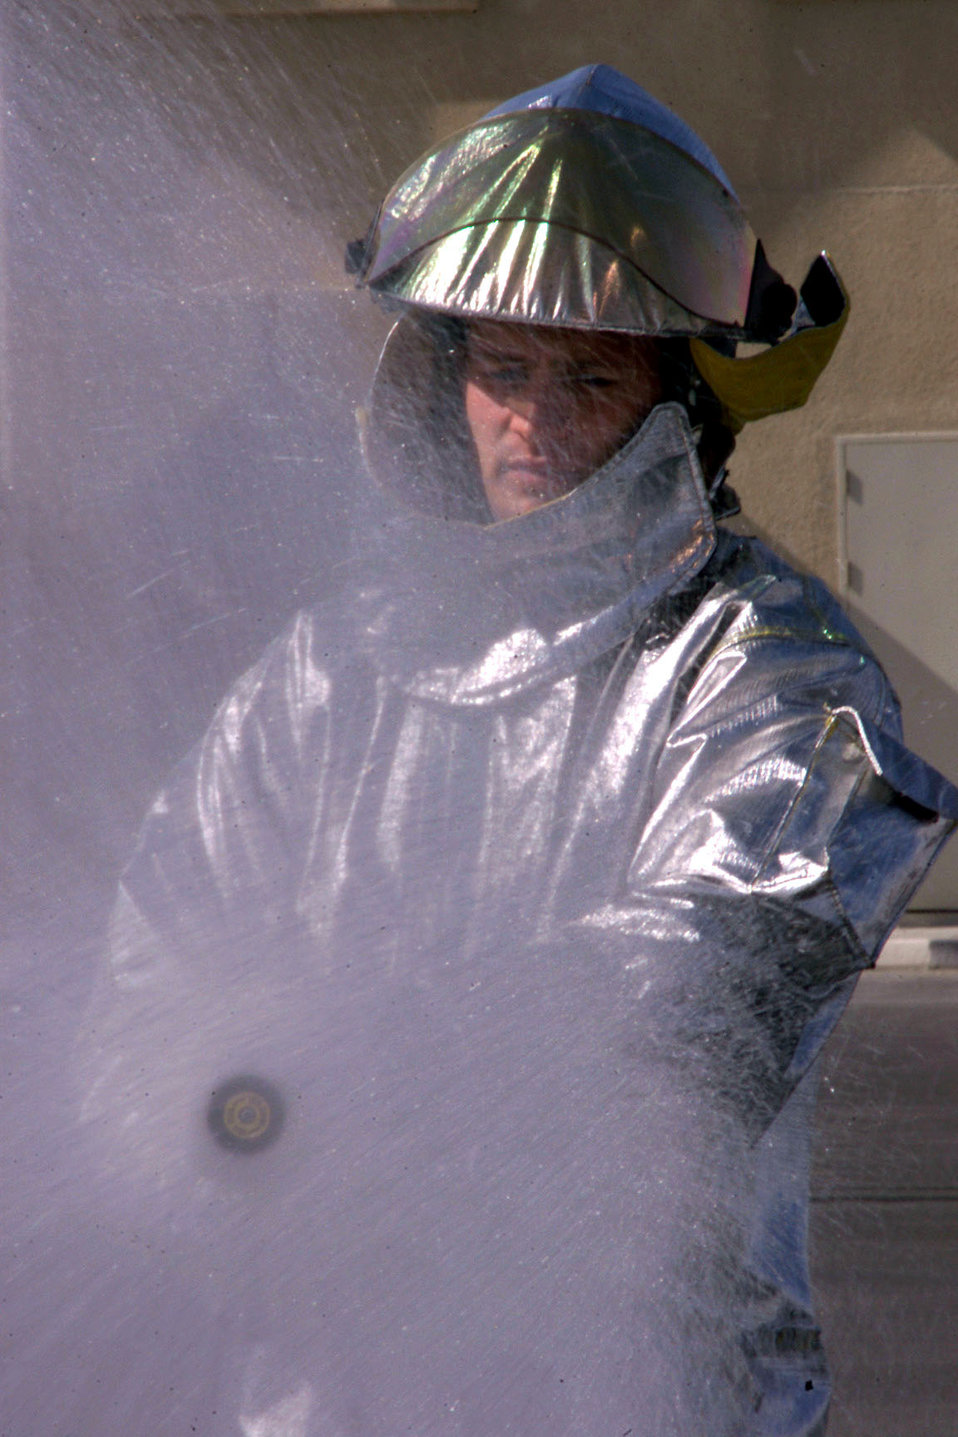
Hose down

OPERATION ENDURING FREEDOM -- Airman 1st Class Matthew McDowell performs a function check on a fire hose at Al Udeid Air Base, Qatar. McDowell is currently deployed to the 379th Expeditionary Civil Engineer Squadron as a firefighter.